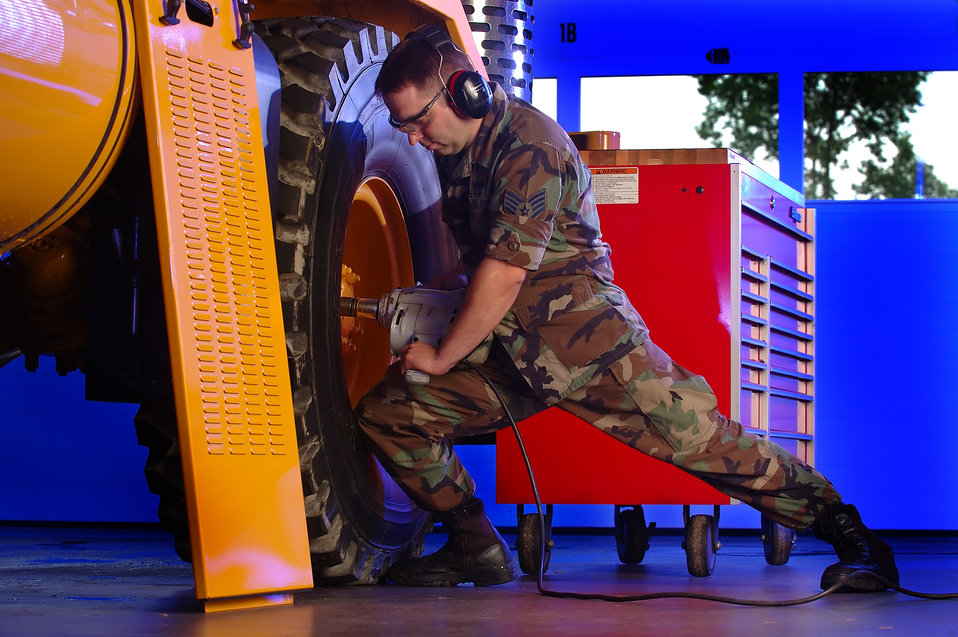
Training for NASCAR

BURGLINGTON, Vt. -- Staff Sgt. Kasey Laplume tightens lug nuts on a snow broom used for clearing the flightline of snow during the long, cold winters at the airport here. He is a special-purpose vehicle mechanic with the Vermont Air National Guard's 158th Logistics Readiness Squadron.